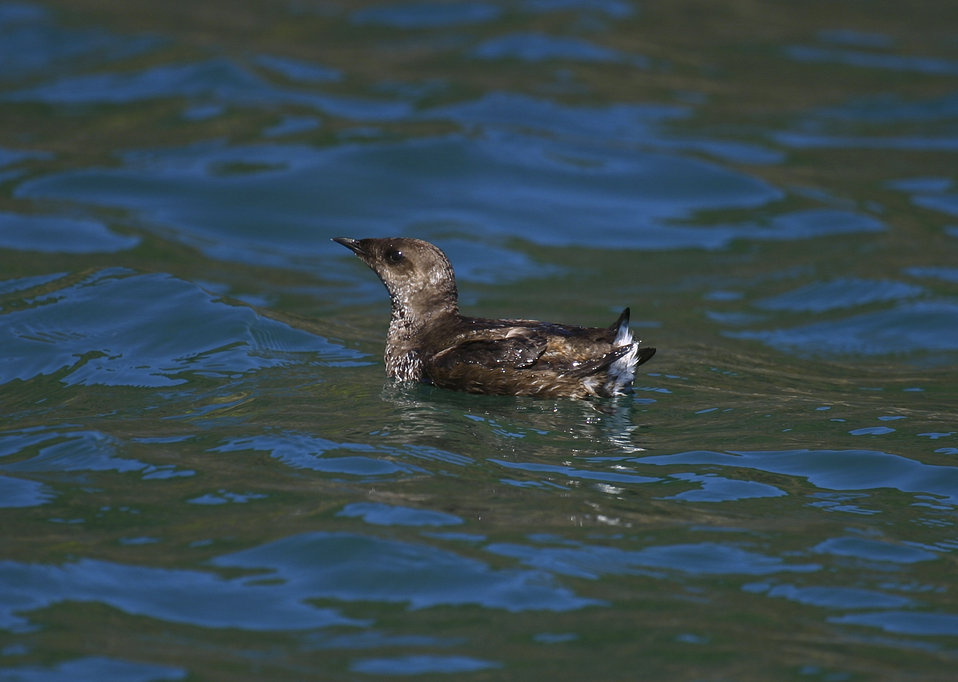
Marbeled Murrelet

Adult Marbled Murrelet on the Oregon Coast adjacent to Oregon Islands National Wildlife Refuge, OR